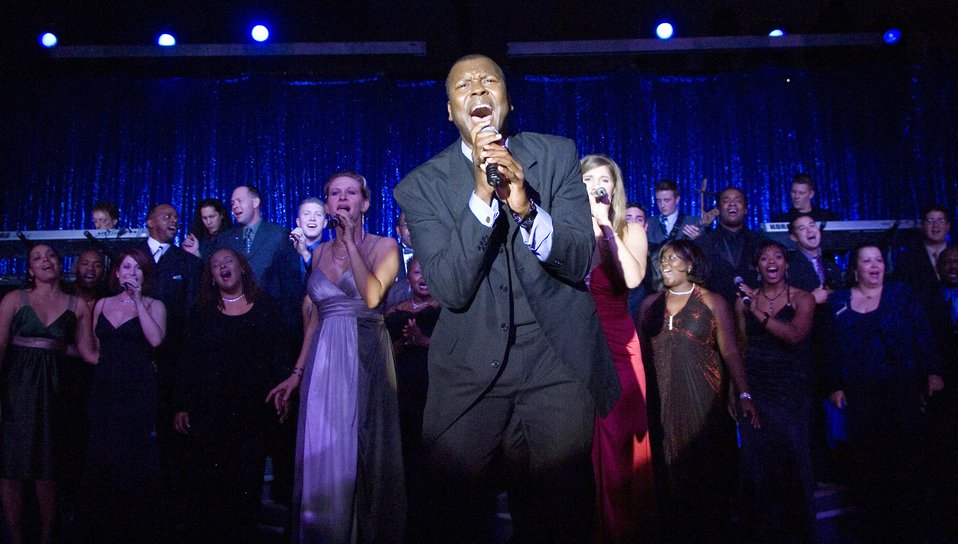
Airmen named the 'Best of the Best'

A prior Tops in Blue performer sings